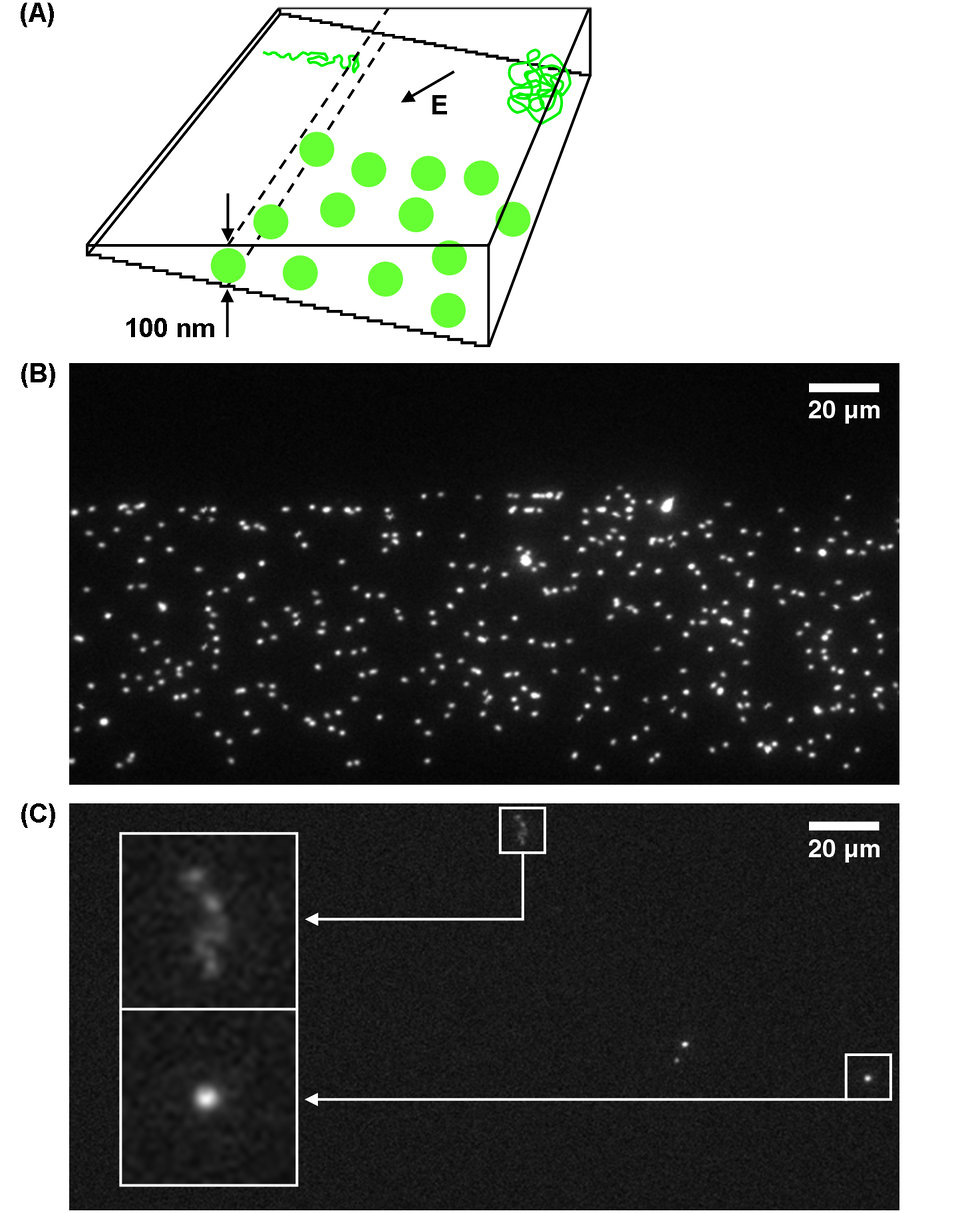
Nanofluidics; 3-D

(A) Schematic of the NIST-Cornell nanofluidic device with complex 3-D surfaces. Each step of the staircase seen on the side marks a different depth within the chamber. The letter E shows the direction of the electric field used to move the nanoparticles through the device. The green balls are spheres with diameters of 100 nanometers whose size restricts them from moving into the shallower regions of the chamber. The coil in the deep end of the chamber (upper right corner) is a single DNA strand that elongates (upper left corner) in the shallow end.

(B) Photomicrograph showing fluorescently tagged spherical nanoparticles stopped at the 100-nanometer level of the chamber, the depth that corresponds to their diameter.

(C) Photomicrograph of a single DNA strand that is coiled in the deep end of chamber (box at far right) and elongated in the shallow end (box at far left). Larger boxes are closeups showing the fluorescently tagged strands.